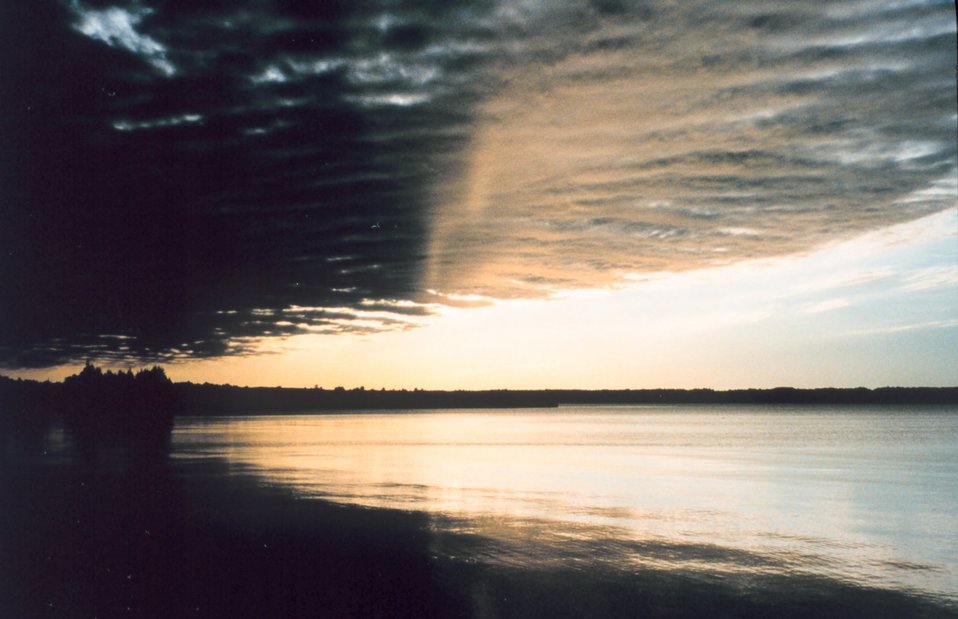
Park Point area